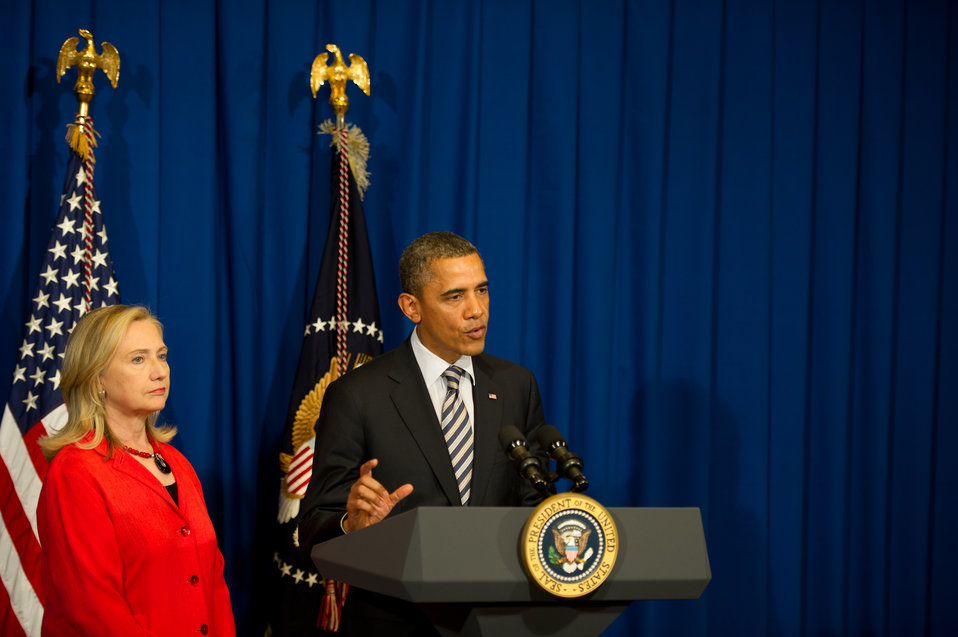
President Obama Announces He Will Send Secretary Clinton to Burma

President Barack Obama, right, announces that he will send U.S. Secretary of State Hillary Clinton, left, to Burma, during the ASEAN Summit in Bali, Indonesia, on November 18, 2011.